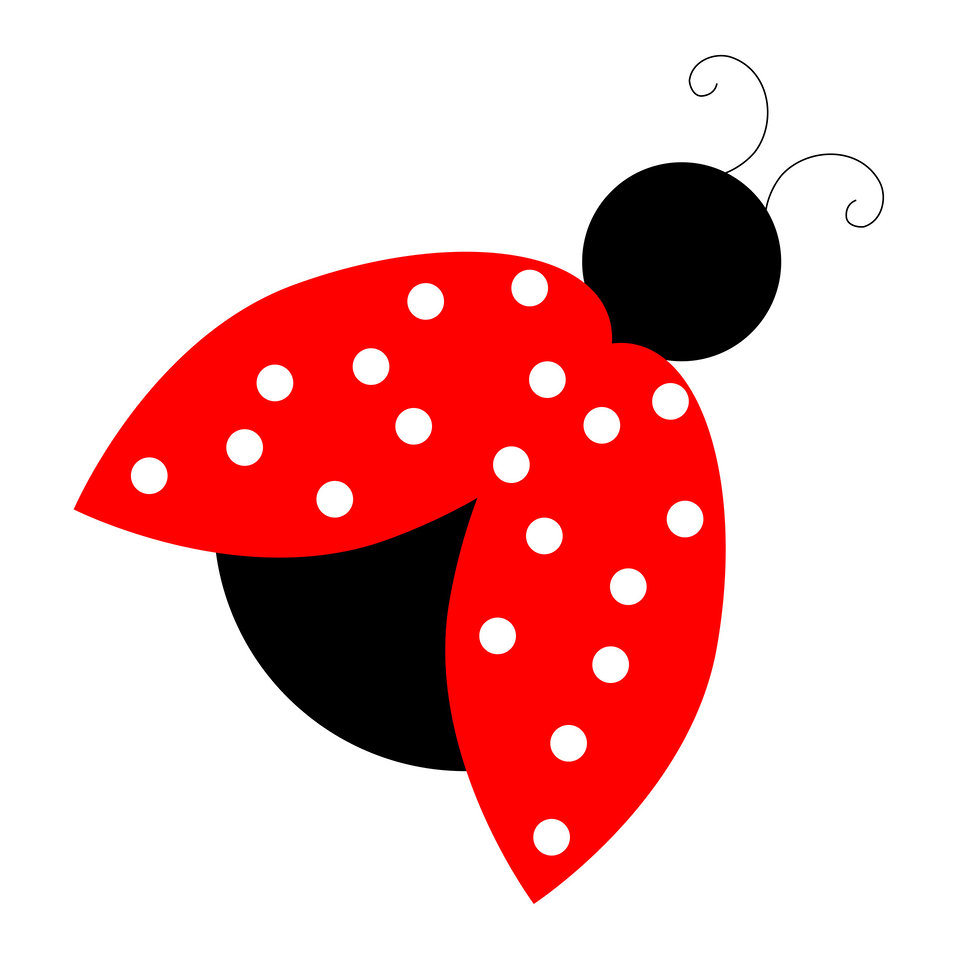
Red ladybug clipart for scrapbooking illustration.